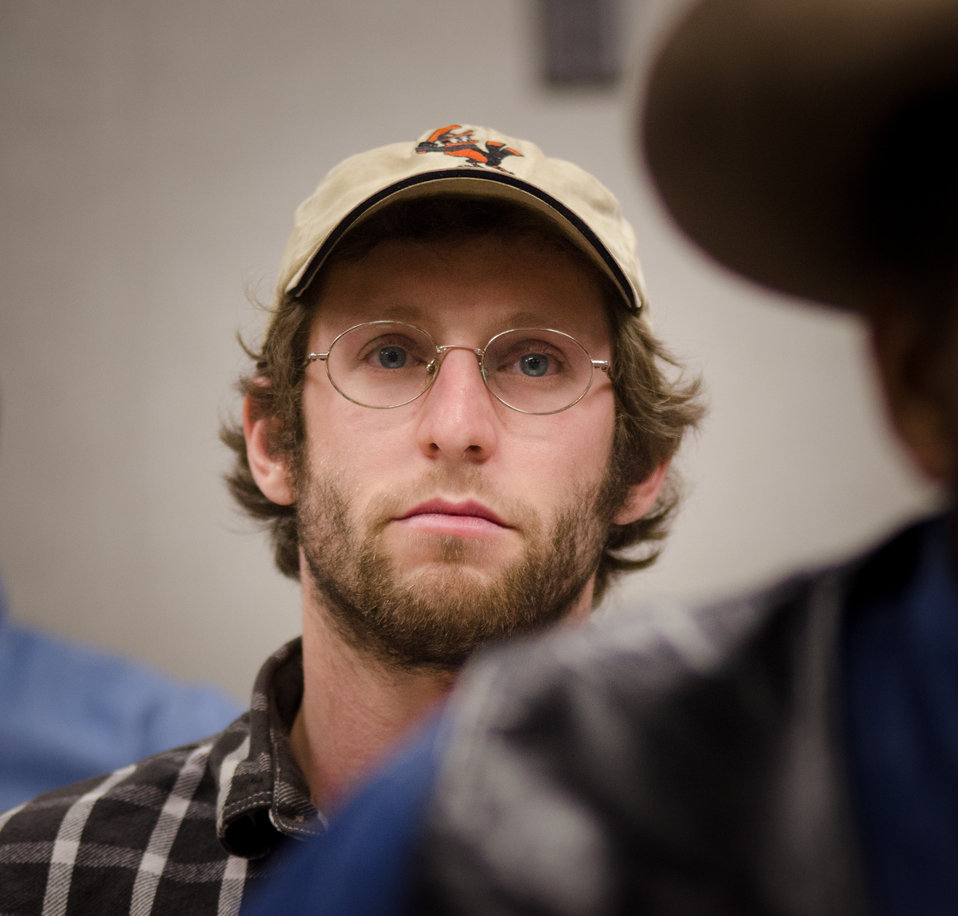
Staffers and farmers came together for the “Virginia State University (VSU), U.S. Department of Agriculture (USDA) and Virginia Farmers Working Together” outreach workshop in the VSU, L. Douglas Wilder building on Thursday, March 7, 2013, in Petersburg, VA. Farmers shared and learned new ways to do more with USDA services, and how to apply for programs that will help grow their business.